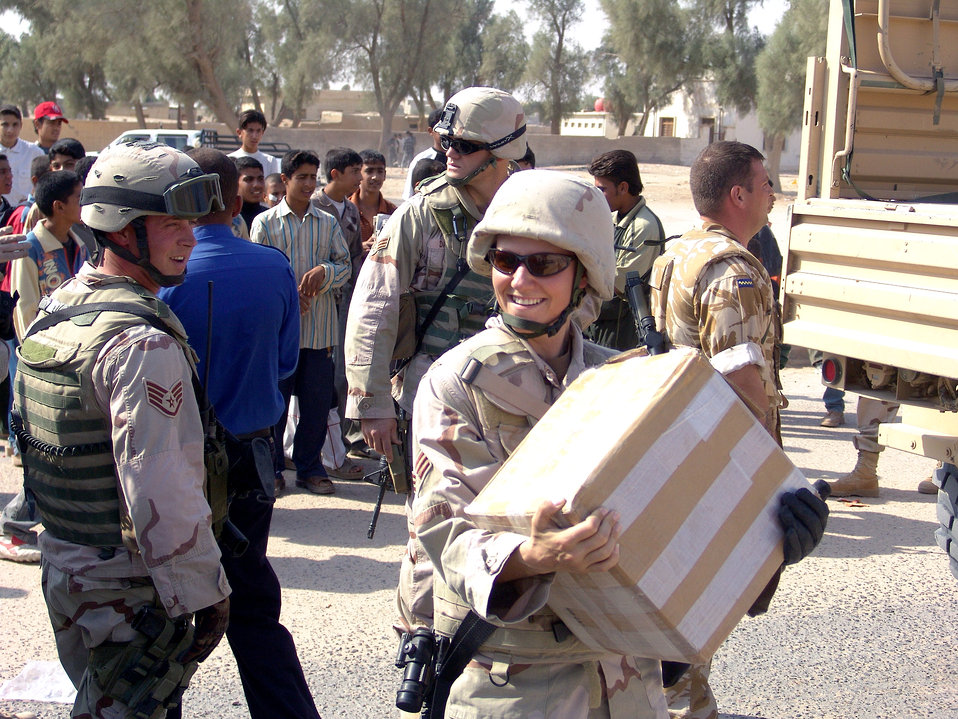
Humanitarian relief

UMM QASR, Iraq (AFPN) -- Senior Airman Jana Sautter helps unload a truck full of school supplies during a humanitarian relief mission in Umm Qasr, Iraq. Coalition forces delivered more than a thousand school supplies and toys to the children Nov. 14. Airman Sautter is assigned to the 568th Expeditionary Security Forces Squadron.